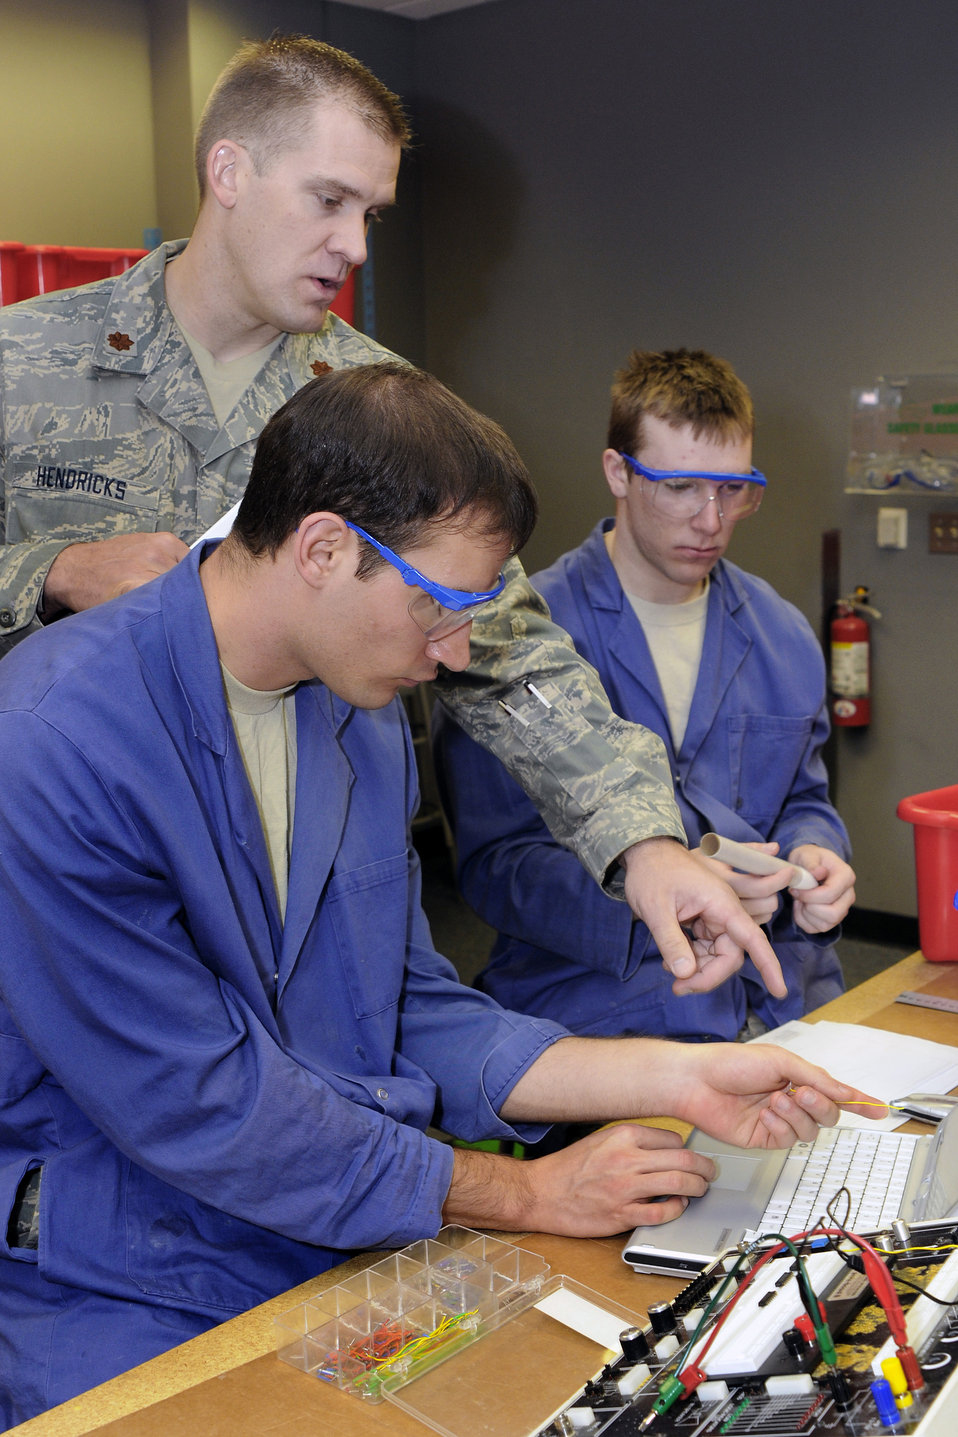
Academy ranked No. 1 among Western 4-year schools

Maj. Steven Hendricks works with Class of 2012 Cadets Andrew Bolton and Michael Beaulieu on an Engineering 101 project at the U.S. Air Force Academy in Colorado Springs, Colo., Feb. 5. The Academy recently was ranked best undergraduate school in the Western United States by U.S. News & World Report magazine for the third straight year. Major Hendricks is an assistant professor for the Academy's Department of Mechanical Engineering.